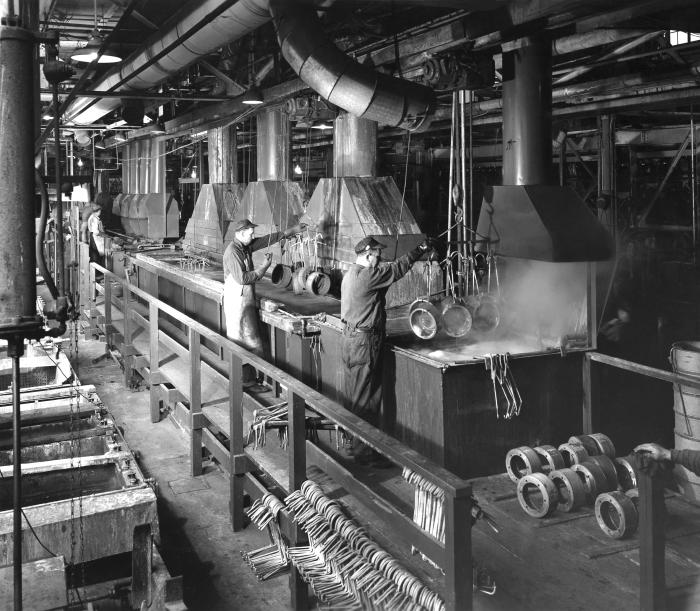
This historical 1953 photograph was provided by the Center for Disease Control's (CDC), National Institute for Occupational Safety and Health (NIOSH). Depicted here, were the 'rinse' and 'pickling' tanks, into which wheel rims were dipped before being brass plated at a Firestone Steel Products Division industrial plant. In the steel pickling, or acid pickling process, acids such as hydrochloric, or sulfuric acids are used to remove any oxidization, i.e., rust, which forms on the steel's surface during its manufacturing process. Note the overhead ventilation units above each chemical vat, which were extracting noxious fumes emitted during the soaking process, Also note that the workers were wearing no protective breathing devices, nor were they wearing goggles. This image was published in the September, 1950, issue of the 'Industrial Hygiene Newsletter'.